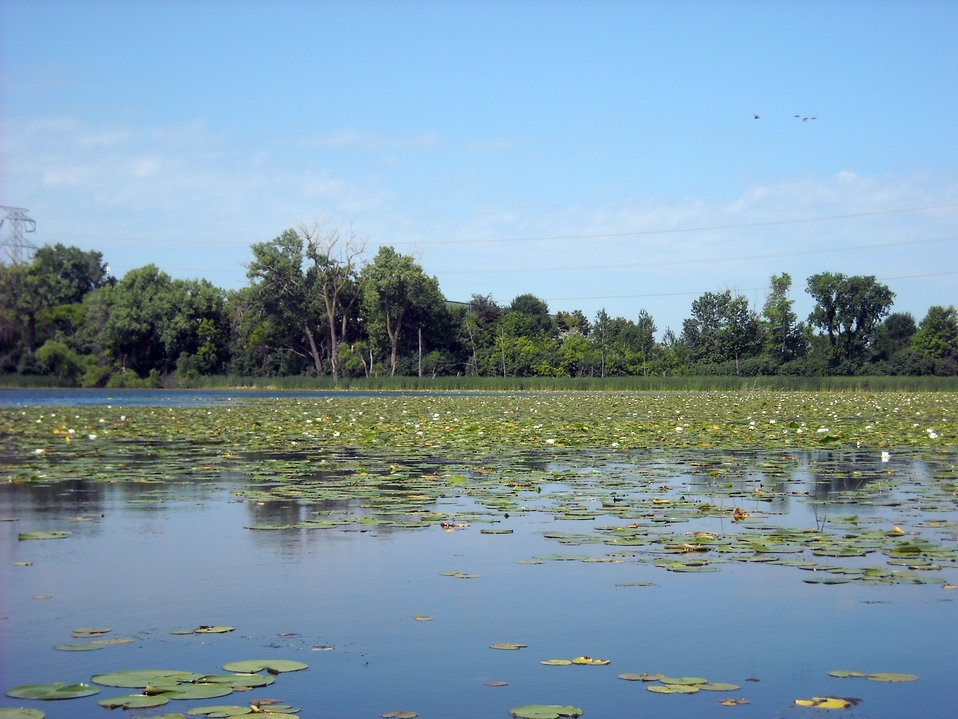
Round Lake

Beautiful day at Round Lake at Minnesota National Wildlife Refuge.